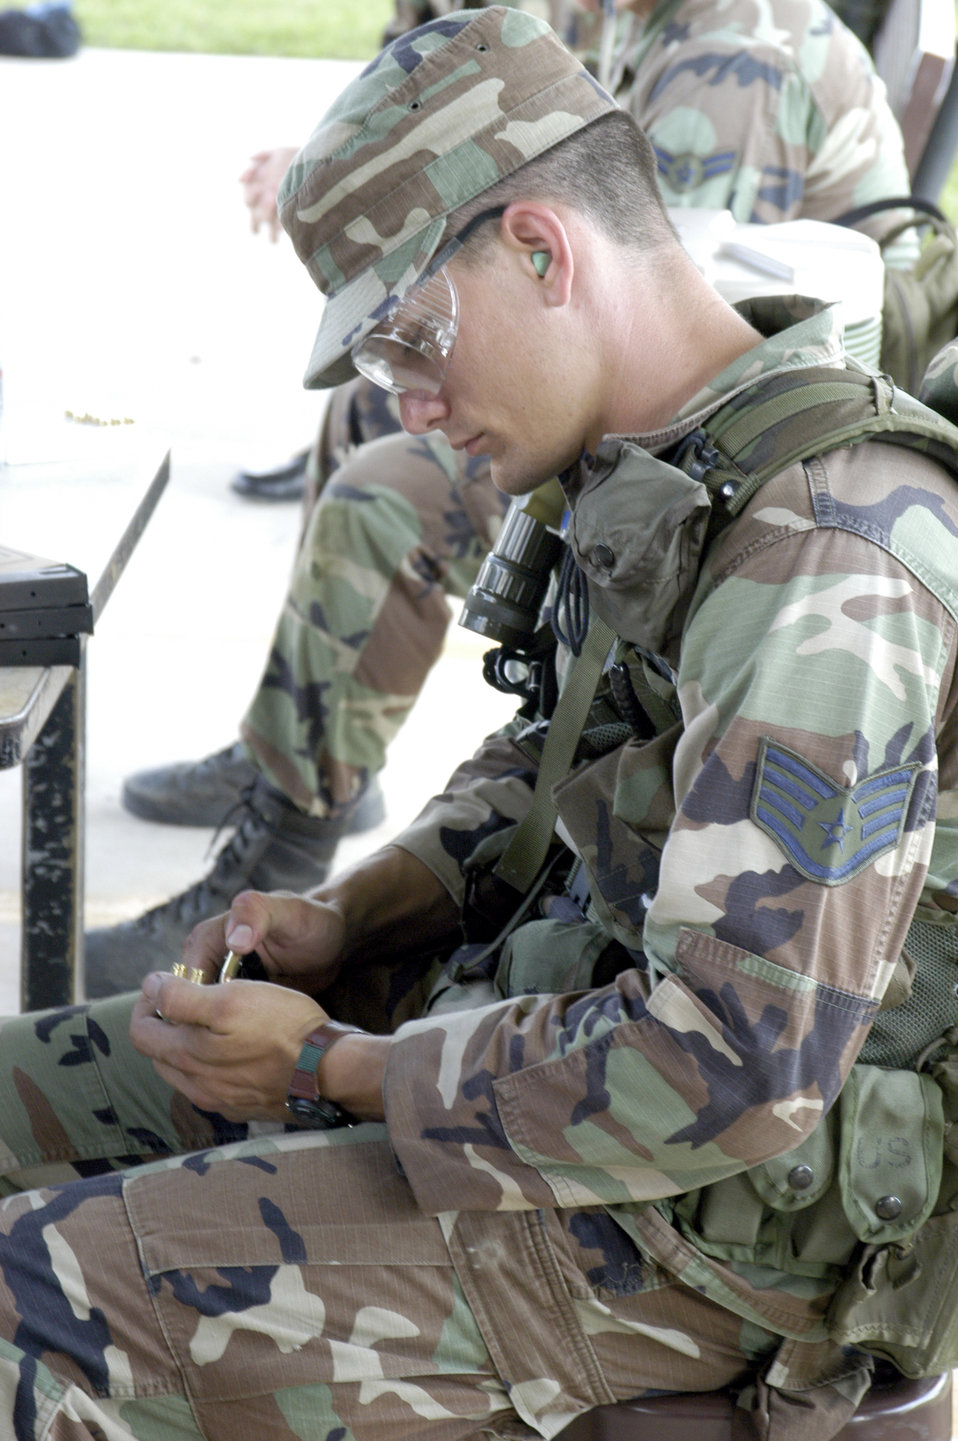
Taking aim

LACKLAND AIR FORCE BASE, Texas -- Staff Sgt. Jack Gilbert unloads a magazine following weapons practice during the Air Education and Training Command Combat Weapons and Tactics Course here. He is a combat arms instructor with the 342nd Training Squadron.